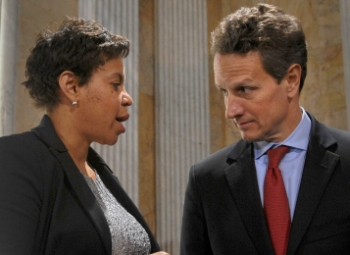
Treasury and SBA Host a Small Business Financing Forum

Secretary Geithner discussed ideas and suggestions throughout the day with various lenders, small business owners and policy makers. Here, Secretary Geithner talks with Lesia Bates Moss from Seedco, a CDFI in New York City.